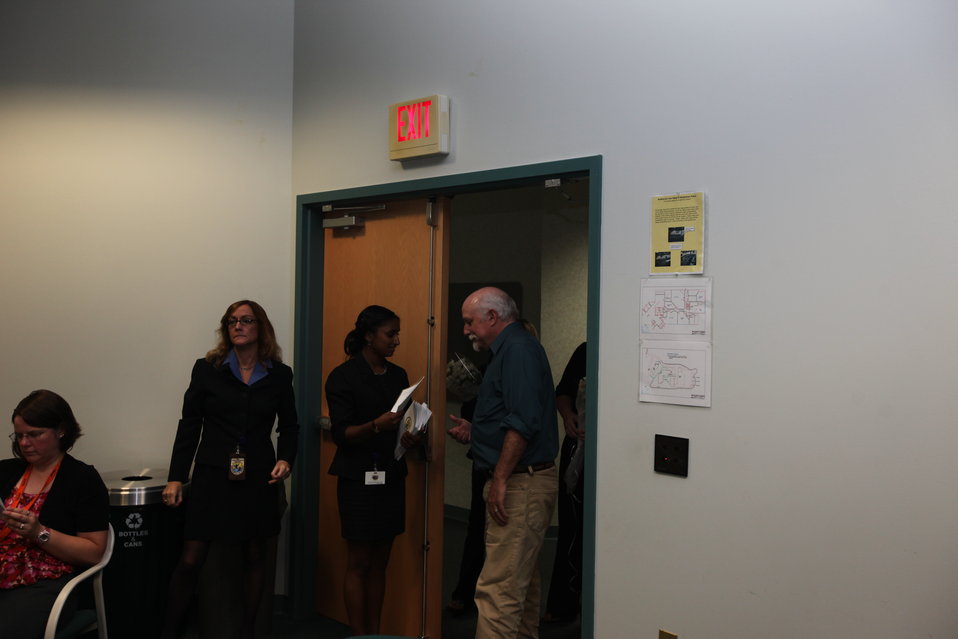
Northeast Region Employee Appreciation Awards